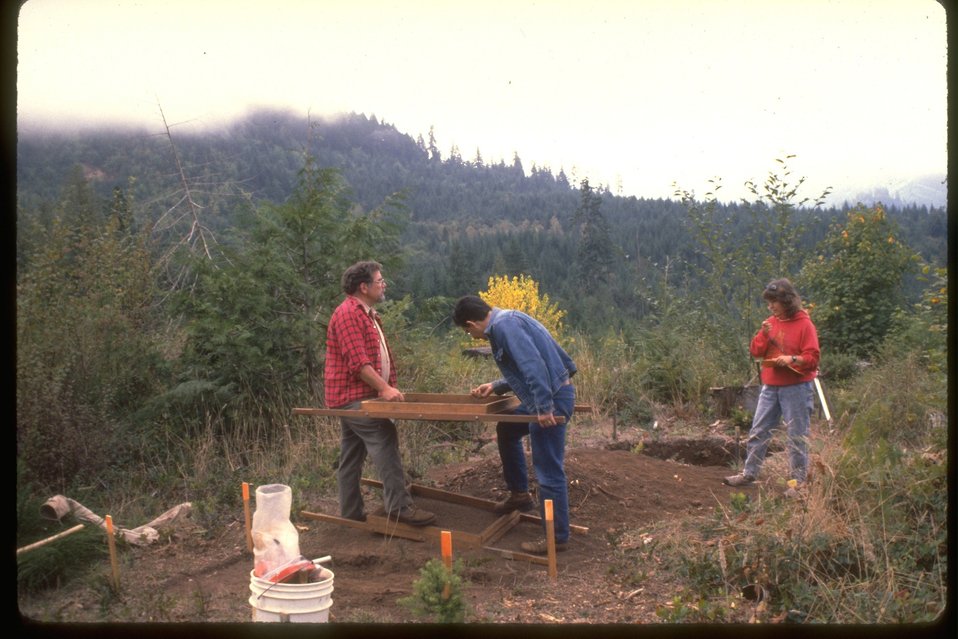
Acheologist Survey Site.